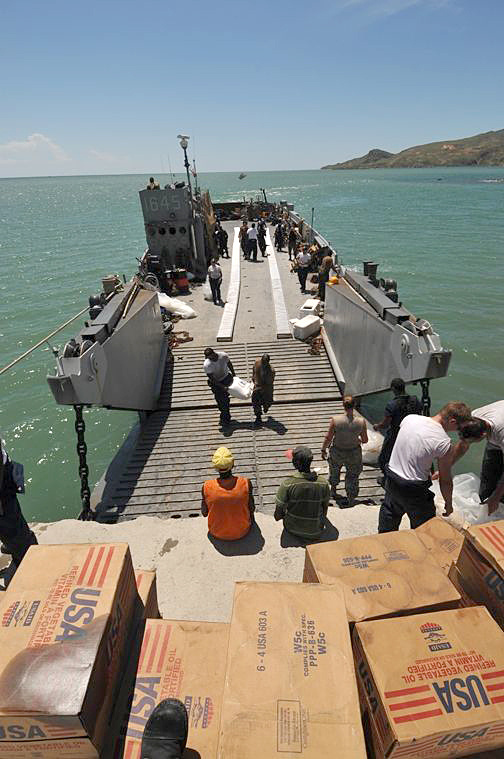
This image depicts emergency food supplies being off-loaded from a US Navy landing craft during relief efforts in Haiti following two hurricanes in 2008.